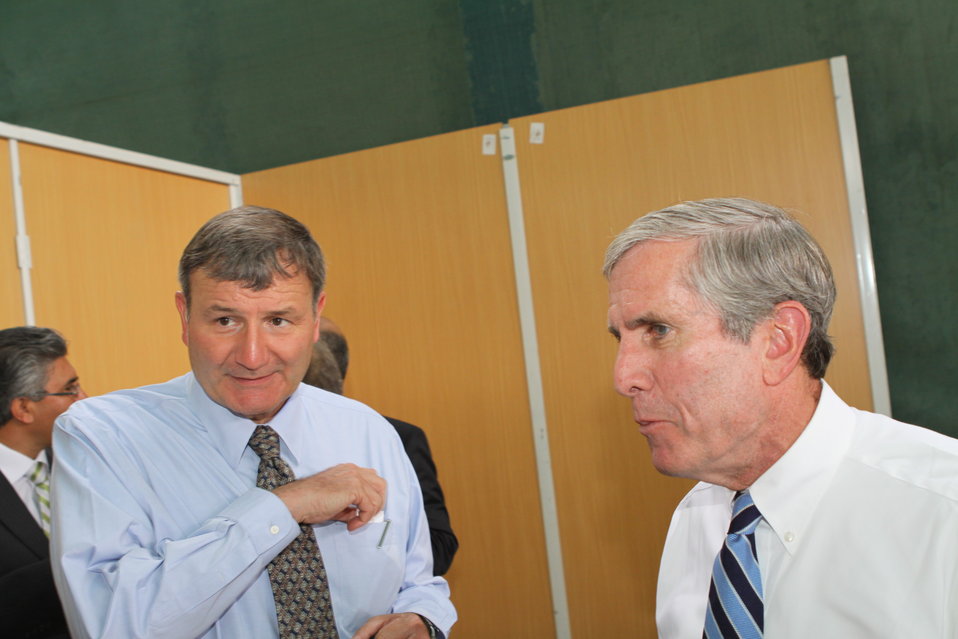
100525 Hirat Marble Conference 556